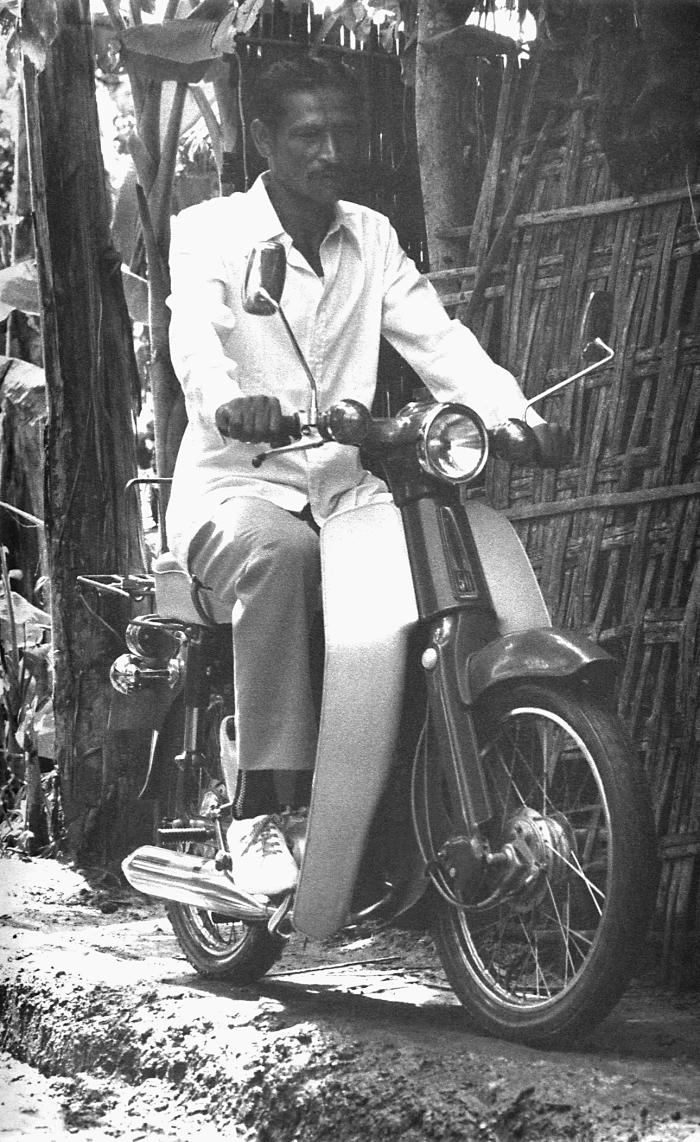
This photograph depicted a smallpox eradication team member riding upon a motor scooter as he rode from town to town in search of any smallpox cases. This photograph provided by Dr. Stan Foster, and captured by Pierre Claquin, M.D., B.A.C., who at the time was a member of the World Health Organization's Smallpox Eradication Program. It was part of a series photographed by former E.I.S. officer, Stanley O. Foster M.D., M.P.H., and was one of a series entitled 'The Story of One Smallpox Jeep', which depicted the travails faced by the jeep, and its occupants of public health practitioners, as they road through the Bangladesh countryside in an attempt to eradicate smallpox from the country.